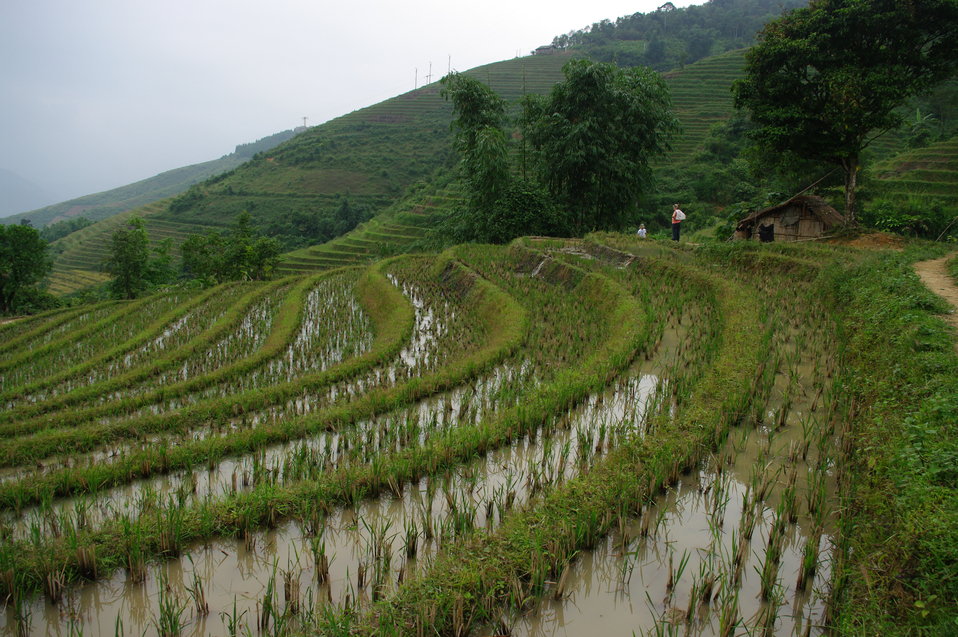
Photo from Sapa in northern Vietnam